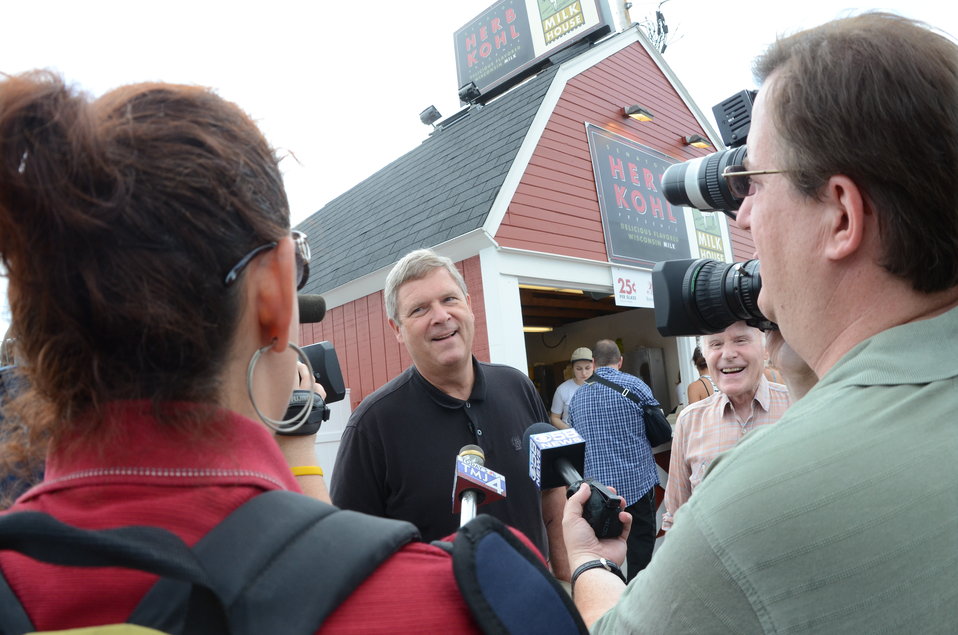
Agriculture Secretary Tom Vilsack and Wisconsin Senator Herb Kohl (right) speaking with the press at the Wisconsin State Fair in West Allis, WI, on Thursday, August 4, 2011, USDA Photo by Lance Cheung.